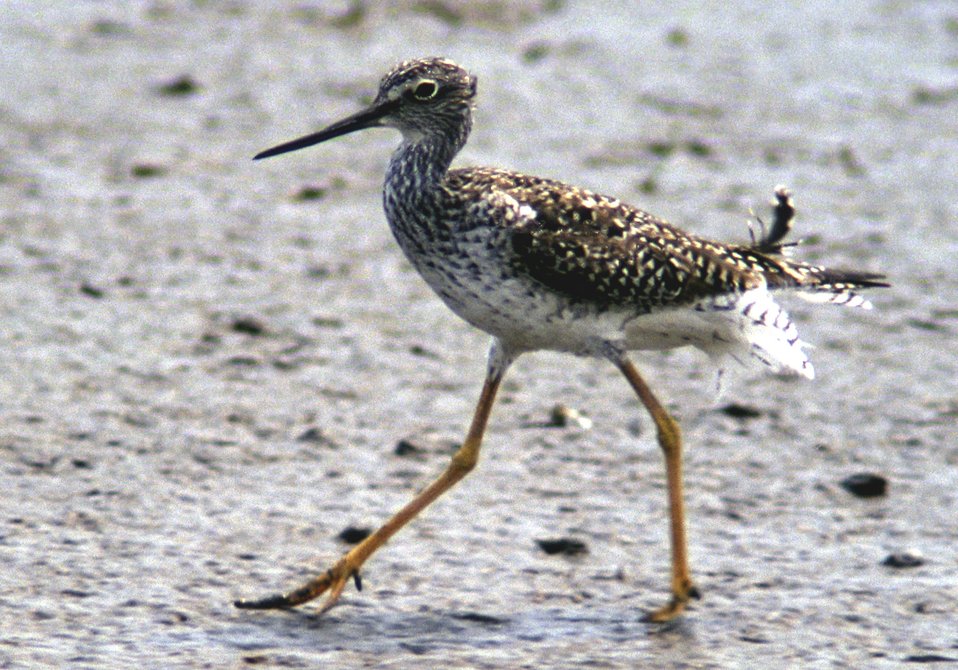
Greater Yellowlegs

Pt. Mahon, DE.